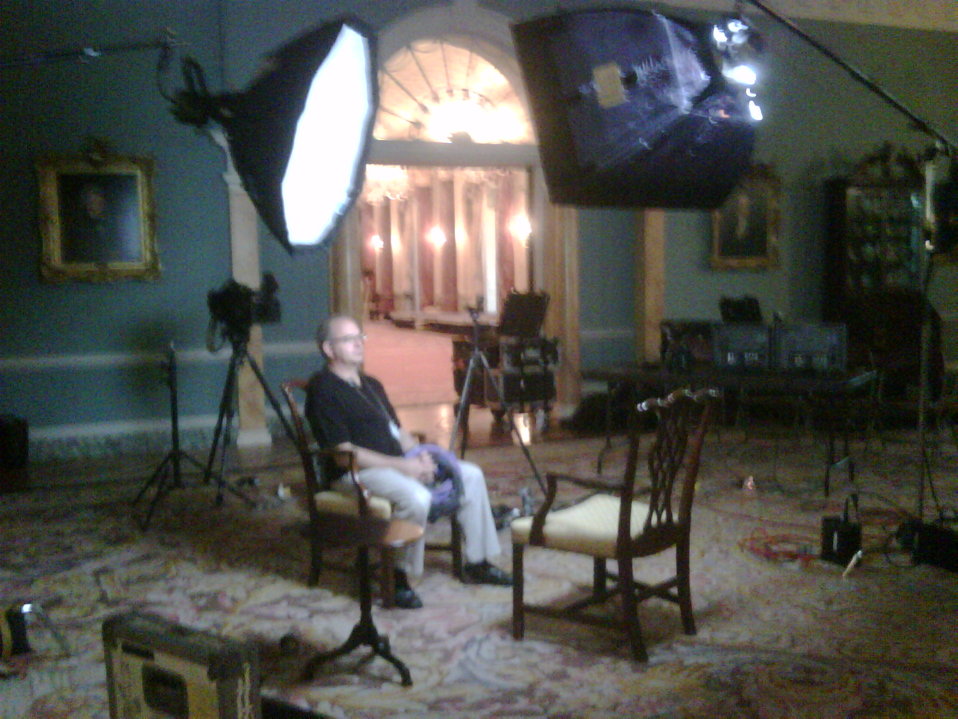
Camera Crew Prepares for Secretary Clinton's '60 Minutes' Interview

Camera crew sets up equipment in preparation for U.S. Secretary of State Hillary Rodham Clinton's interview with CBS' 60 Minutes at the U.S. Department of State, Washington, D.C., May 7, 2010.